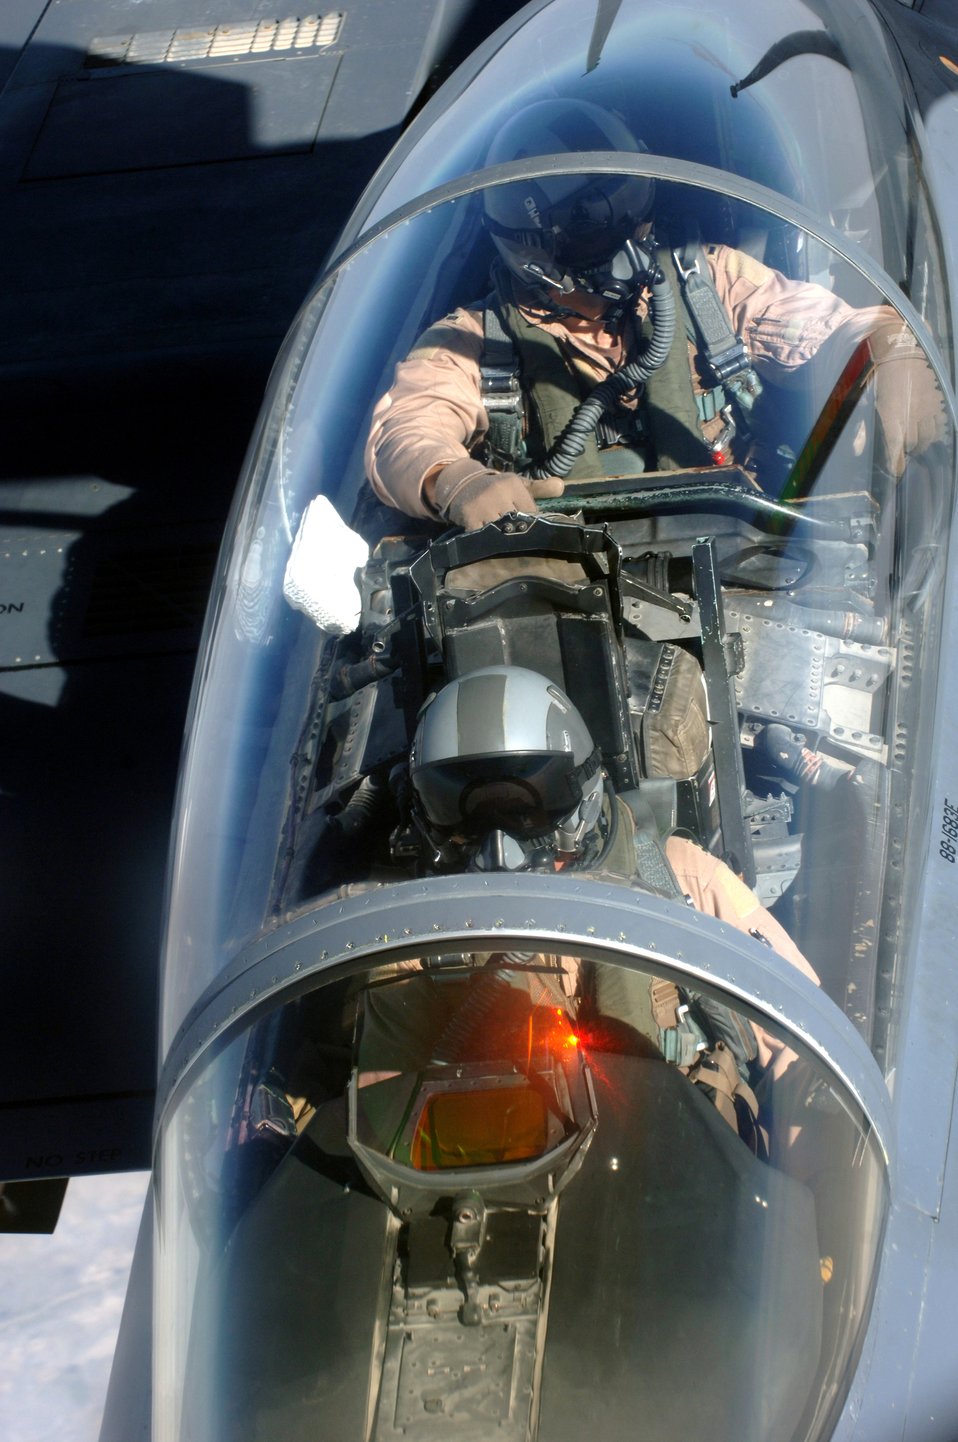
A view to a refuel

An F-15E Strike Eagle from the 336th Expeditionary Fighter Squadron is refueled over Southwest Asia by a KC-135 Stratotanker from the 340th Expeditionary Air Refueling Squadron on Tuesday, April 11, 2006. The F-15E is deployed from Seymour Johnson Air Force Base, N.C., and the KC-135 is from Fairchild AFB, Wash.